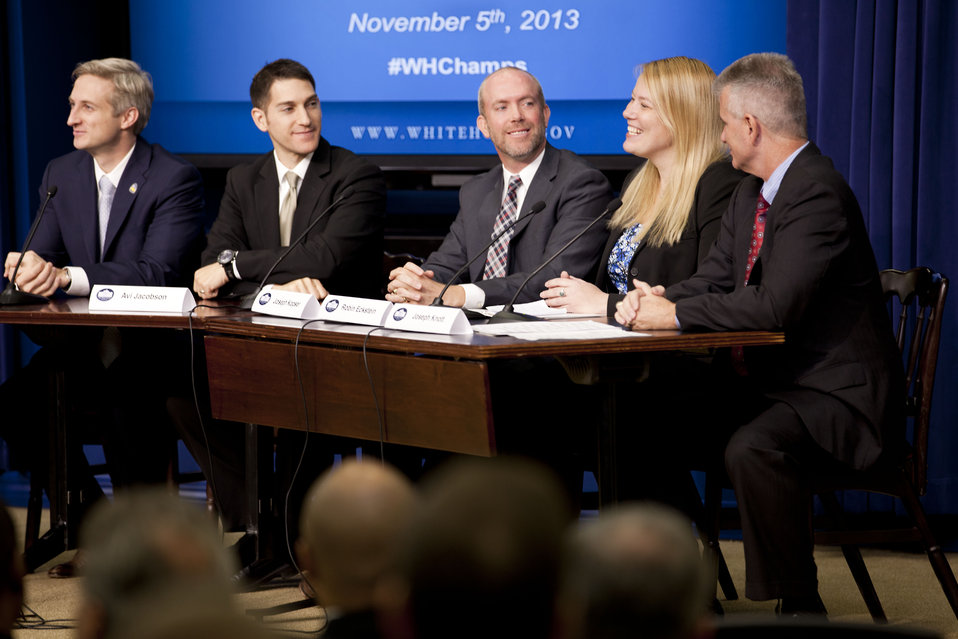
Robin Eckstein, one of the Champions honored at the White House Champions of Change event, speaks about her experience driving trucks while serving in Iraq, and how this has influenced her work in advocating for comprehensive clean energy reform.